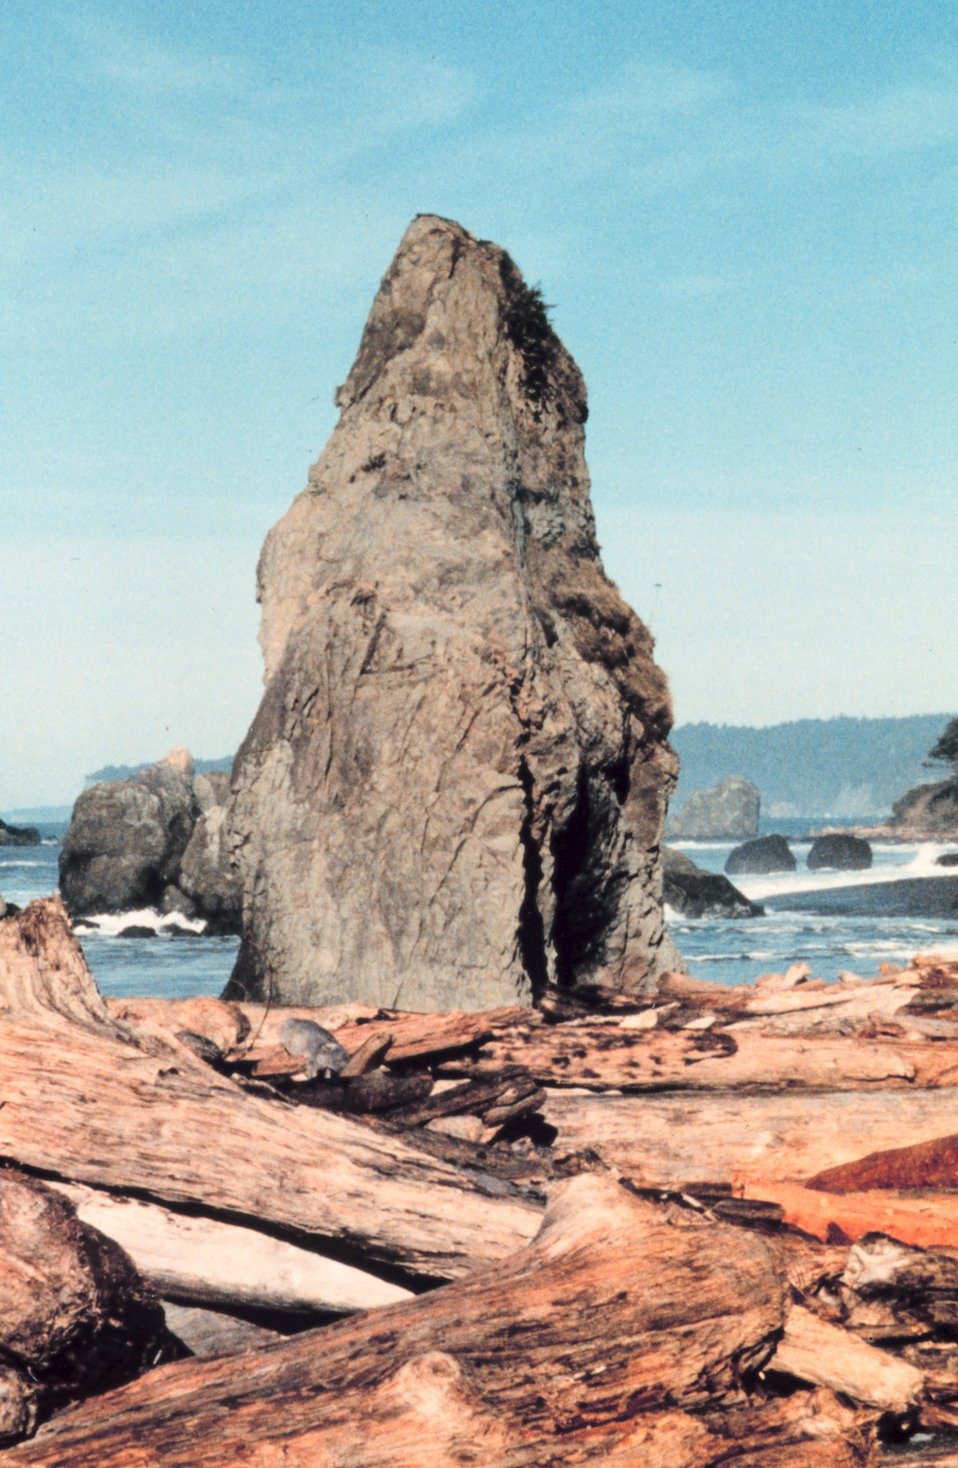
Pinnacle rocks and weather-beaten logs - trademarks of the Oregon coast.